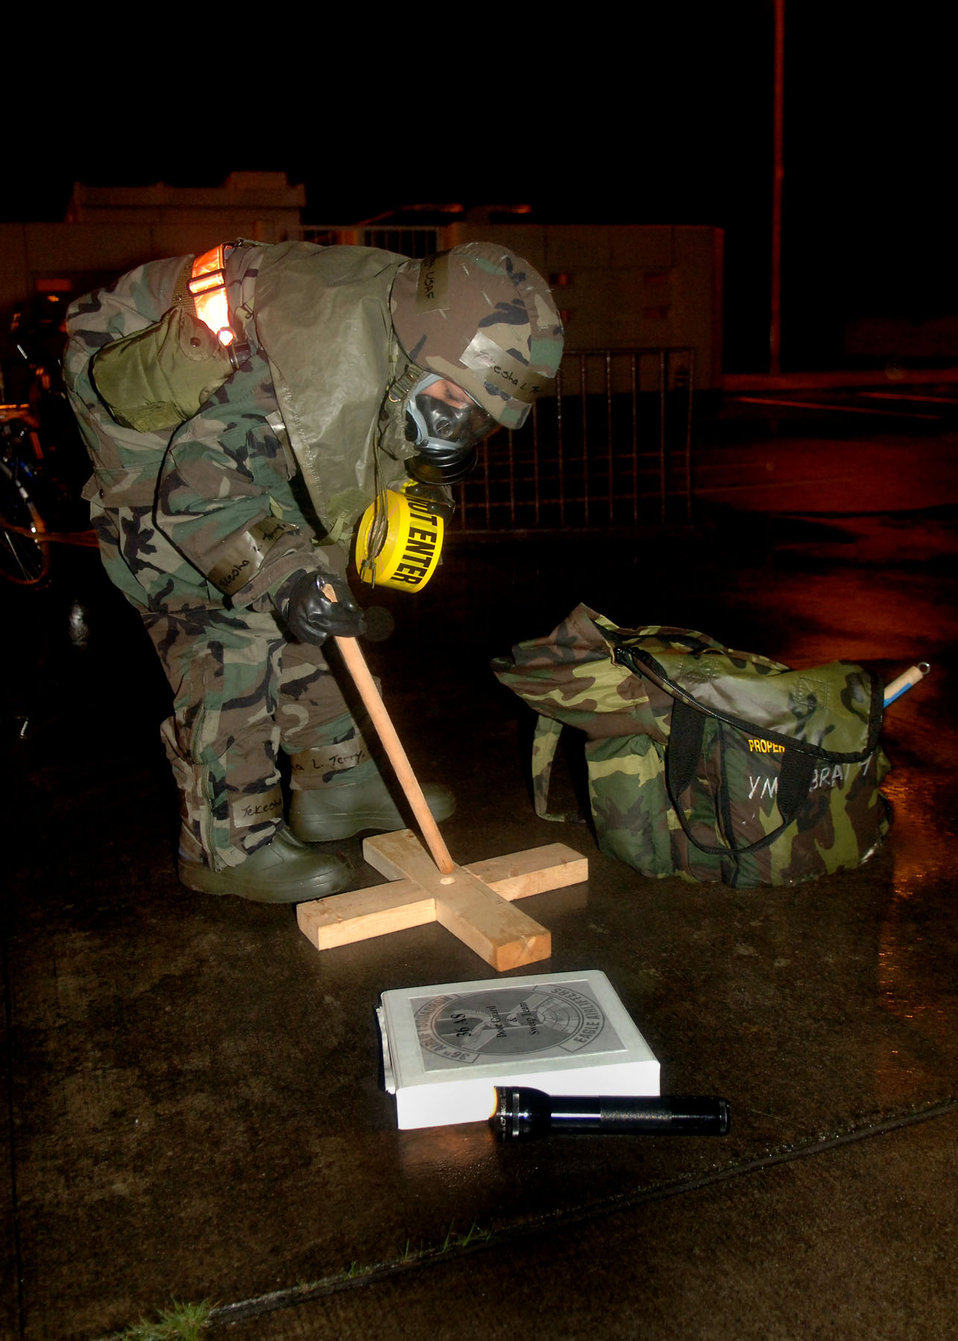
Practicing to stay safe

Staff Sergeant Tekesha Terry erects a cordon around an unexploded ordnance while on a post-attack sweep during an exercise at Yokota Air Base, Japan. The 374th Air Wing was conducting the exercise to test Airmen's responses to chemical or biological hazards. Sergeant Terry is with the 36th Airlift Squadron.